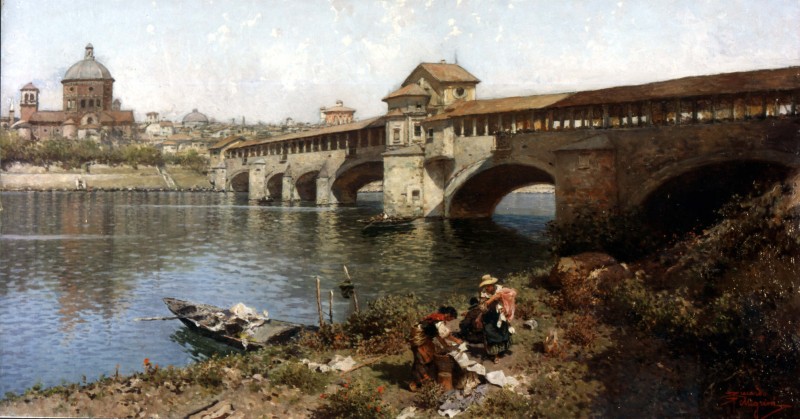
Artgate Fondazione Cariplo - Pellegrini Riccardo, Il ponte medievale sul Ticino a Pavia